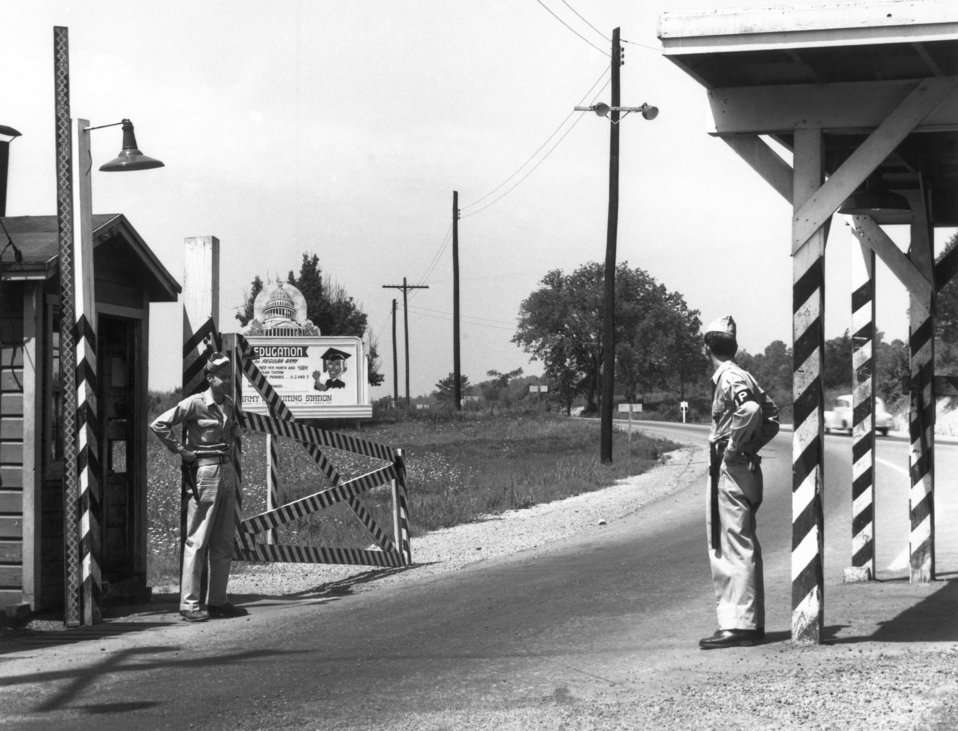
Solway Gate MPs on duty Oak Ridge

C-1894 DOE photo by Ed Westcott Solway Gate MPs on duty Oak Ridge Tennessee 1946